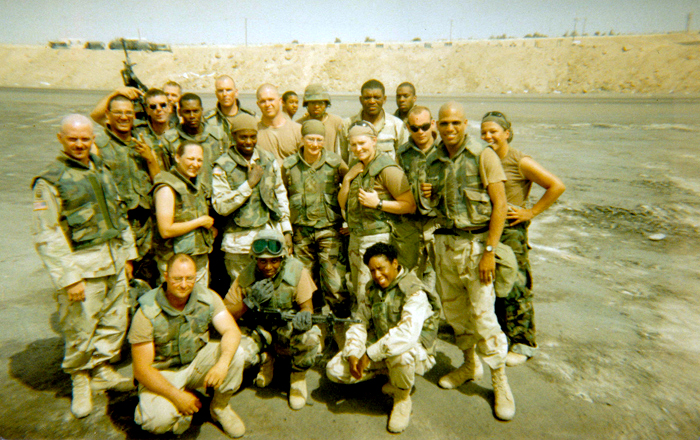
Shelli Kallie

Shelli Marie Kallie, a Supervisory Secretary to the Assistant Regional Director of Budget and Administration in Region I, is a retired Sergeant First Class after serving 23 years on Active Duty in the U.S. Army from October 1986 to March 2010. Her duty assignments consisted of Fort Steward, Georgia; Pirmasens Germany; Fort Bliss, Texas; Gieblestadt, Germany; Fort Lewis, Washington; Bamberg, Germany; and Fort Drum, New York. She participated in three deployments, Korea for Supporting the Patriot in 1994 and Iraq for Operation Iraqi Freedom in March 2003 and September 2005.She says: “I am blessed and proud to say that I served our country for 23 years as an American Soldier and now I am working with others to conserve, protect and enhance fish, wildlife and plants and their habitats for the continuing benefit of the American people as a U.S. Fish and Wildlife Service employee.”